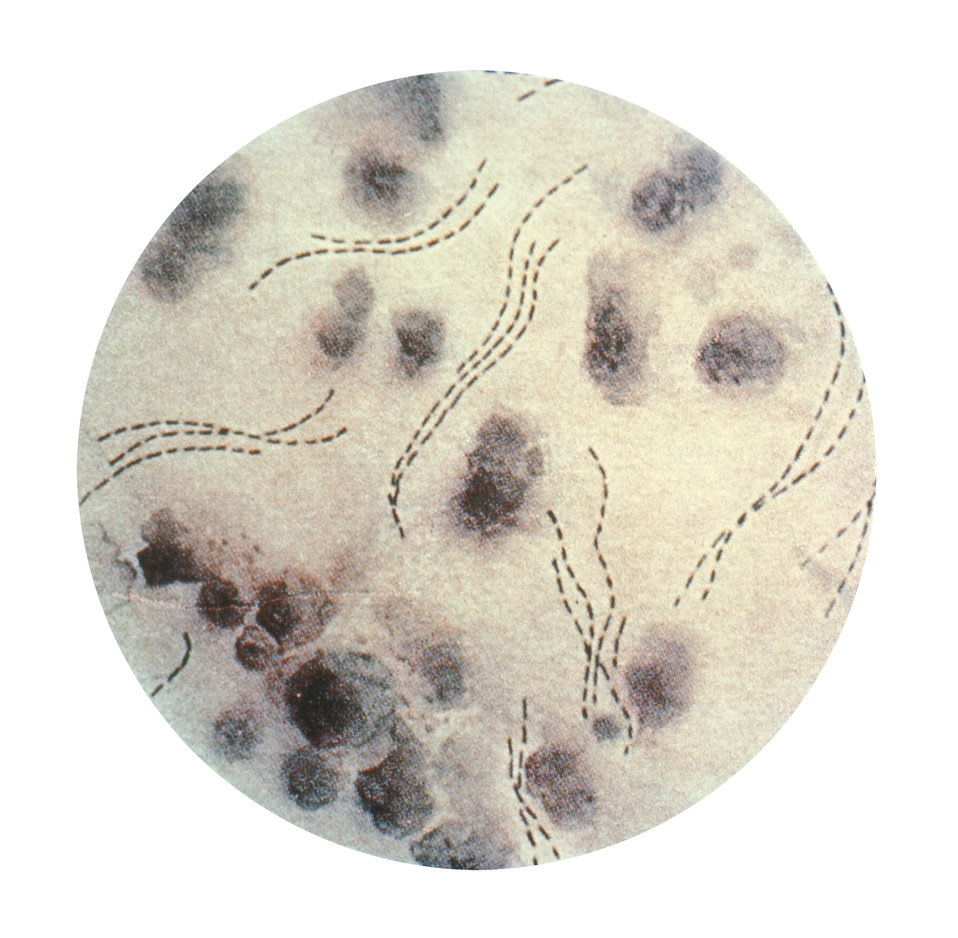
A photomicrograph of Haemophilus ducreyi bacteria stained using Gentian Violet.